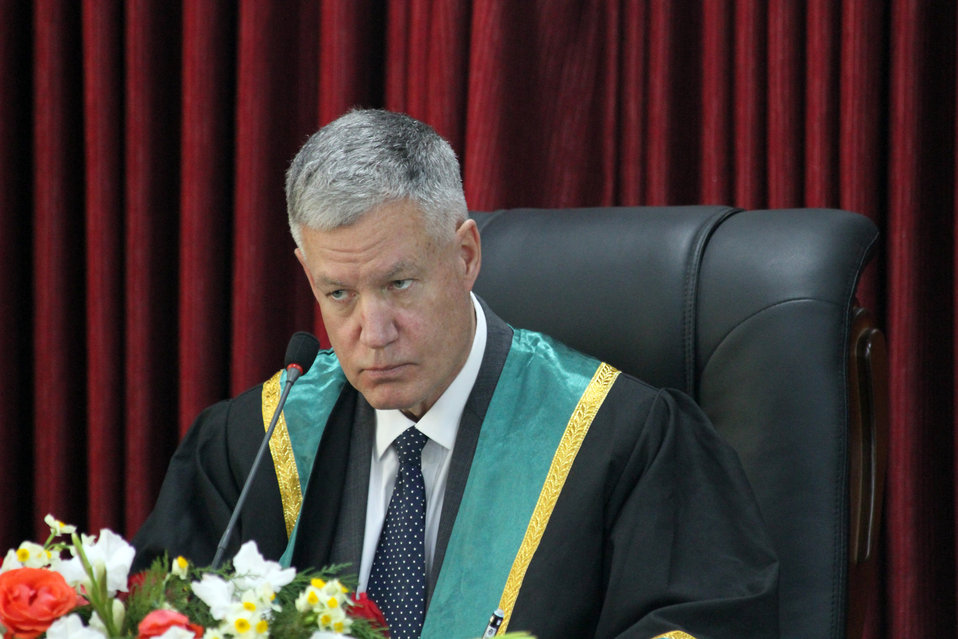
Afghanistan Final National Round of the 2013 Philip C.Jessup International Law Moot Court Competition